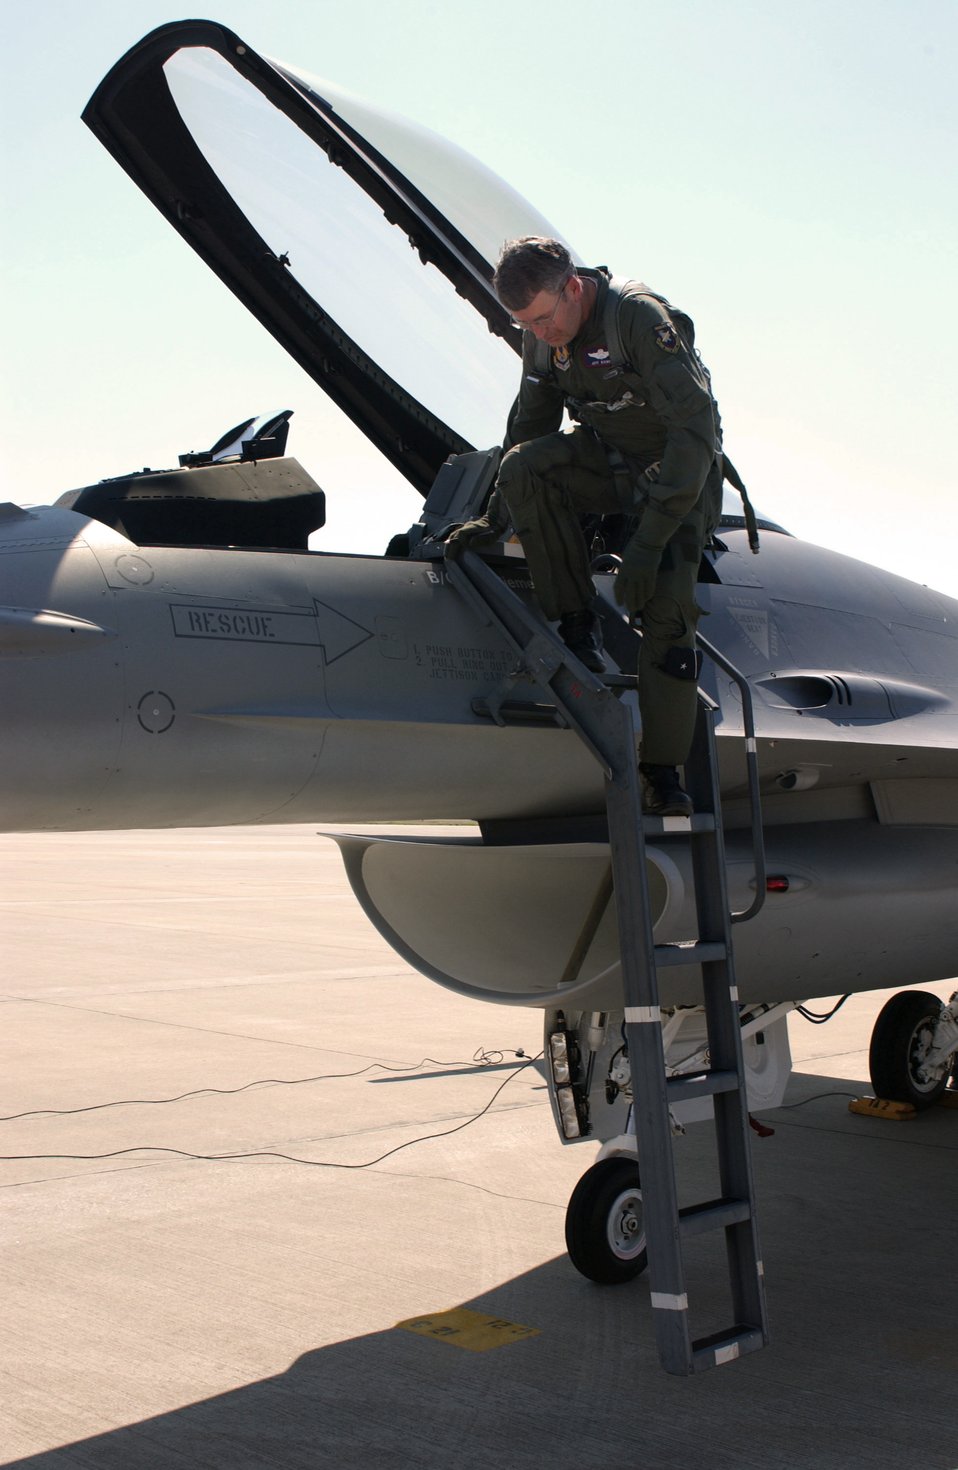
Air Force receives last F-16 Falcon

SHAW AIR FORCE BASE, S.C. -- Brig. Gen. Jeff Riemer climbs down from the cockpit of the last new Air Force F-16 Fighting Falcon shortly after flying it here from the Lockheed Martin plant in Fort Worth on March 18. General Riemer was the System Program Office director when the contract for F-16s was awarded. While Lockheed will continue to produce F-16s for international coalition partners, this aircraft is the last of 2,231 F-16s produced for the Air Force. The first delivery was in 1978. General Riemer is now the director of operations at the Air Force Materiel Command headquarters here.